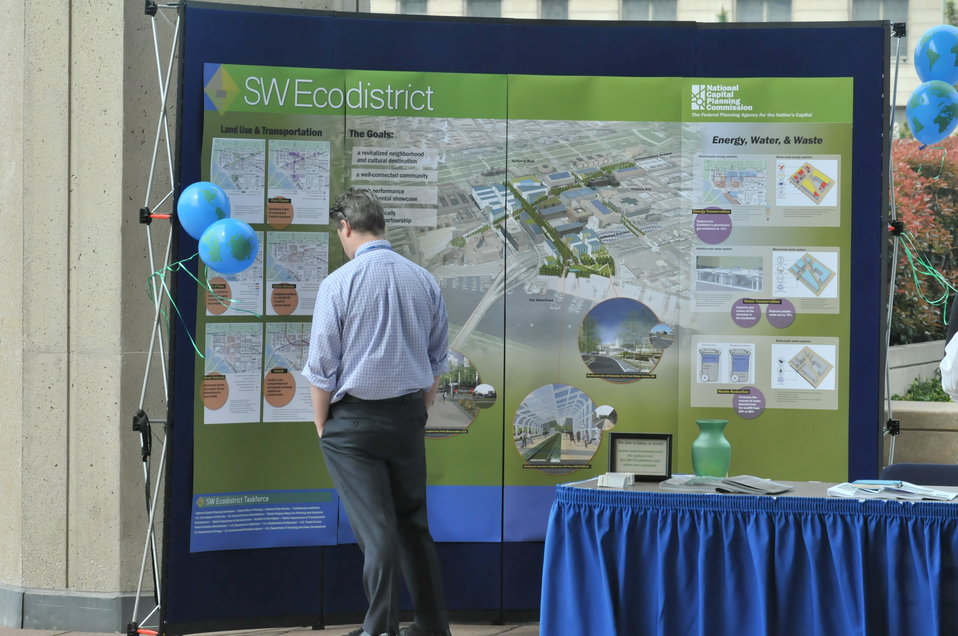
U.S Postal Services introduces a new Global: Sea Surface temperatures forever stamp at the Earth Day program at Department of Energy on April 22, 2014.